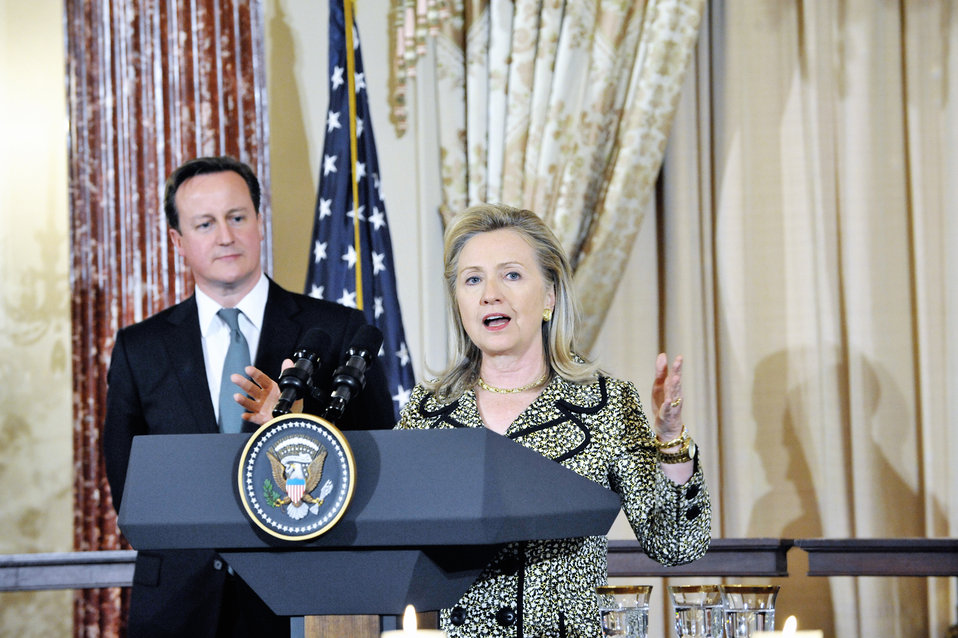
Secretary Clinton Discusses the U.S.-UK Relationship

U.S. Secretary of State Hillary Rodham Clinton discusses the U.S.-UK relationship at the luncheon in honor of UK Prime Minister David Cameron, left, at the U.S. Department of State in Washington, D.C., on March 14, 2012.